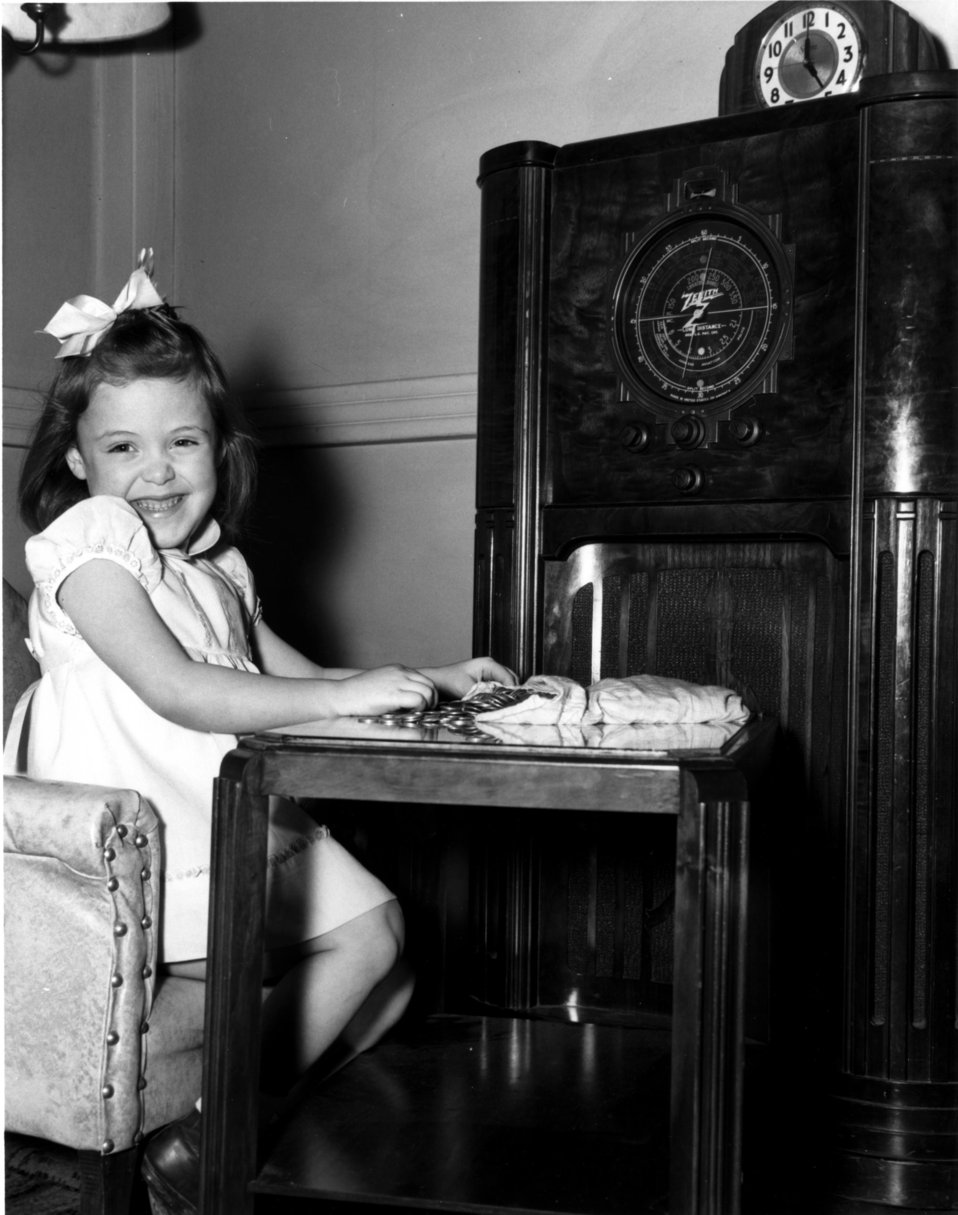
Daily Life at Oak Ridge